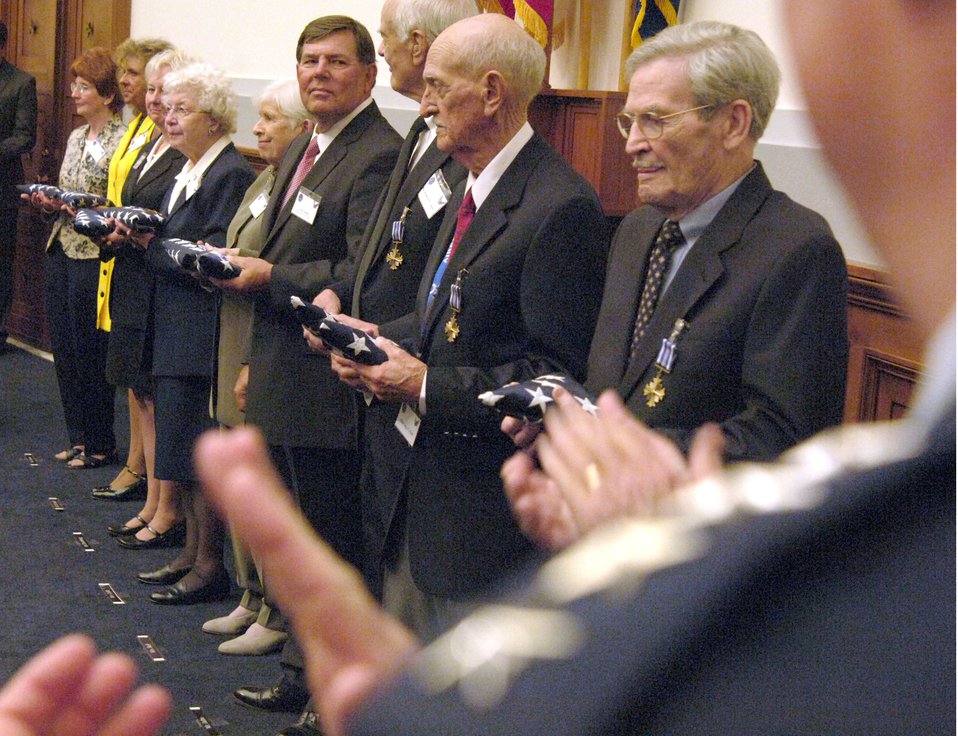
WWII bomber crew awarded Distinguished Flying Cross

World War II's